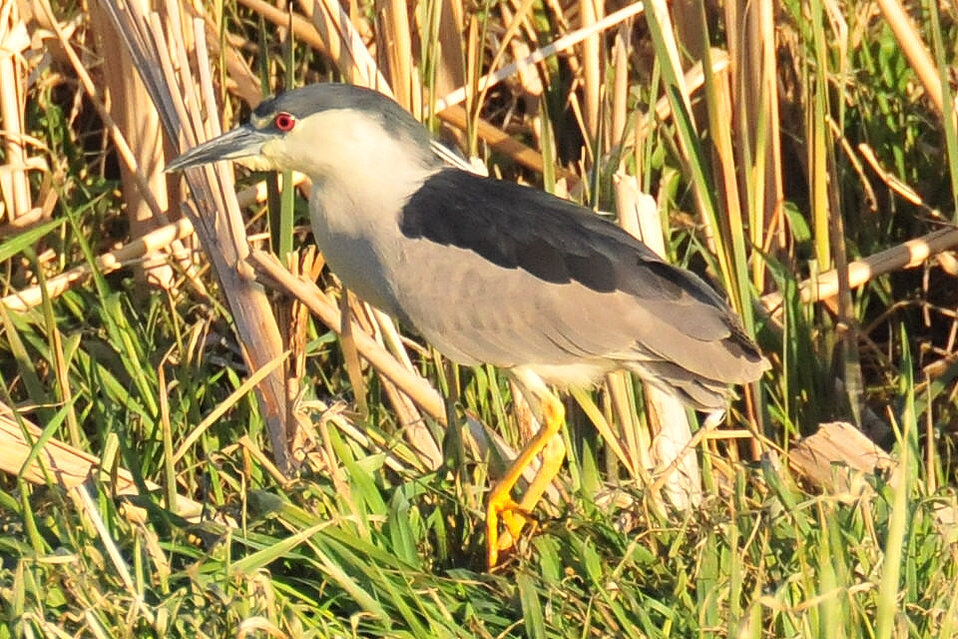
Black-Crowned Night-Heron on Lacreek NWR